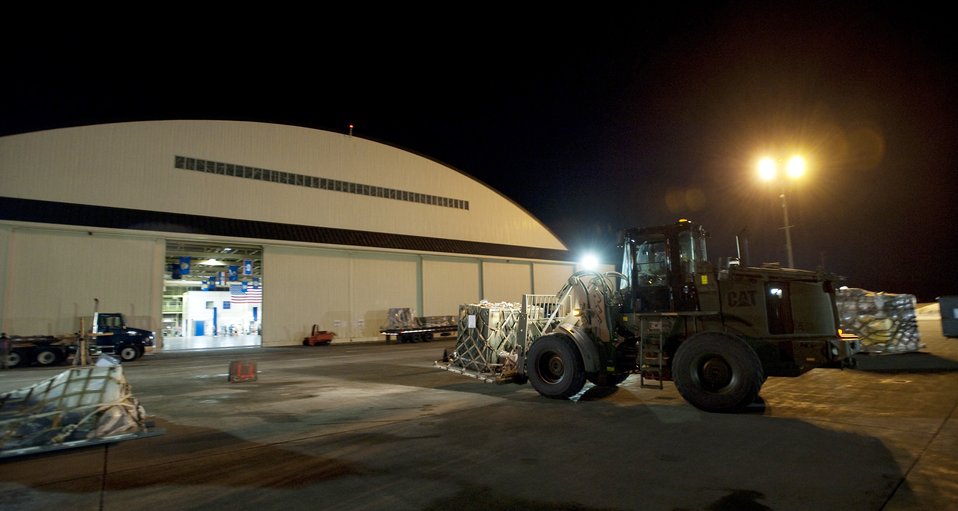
Misawa operations after dark

A 10,000-pound forklift brings an aircraft pallet into a hangar during an operational readiness exercise Jan. 28, 2010, at Misawa Air Base, Japan.